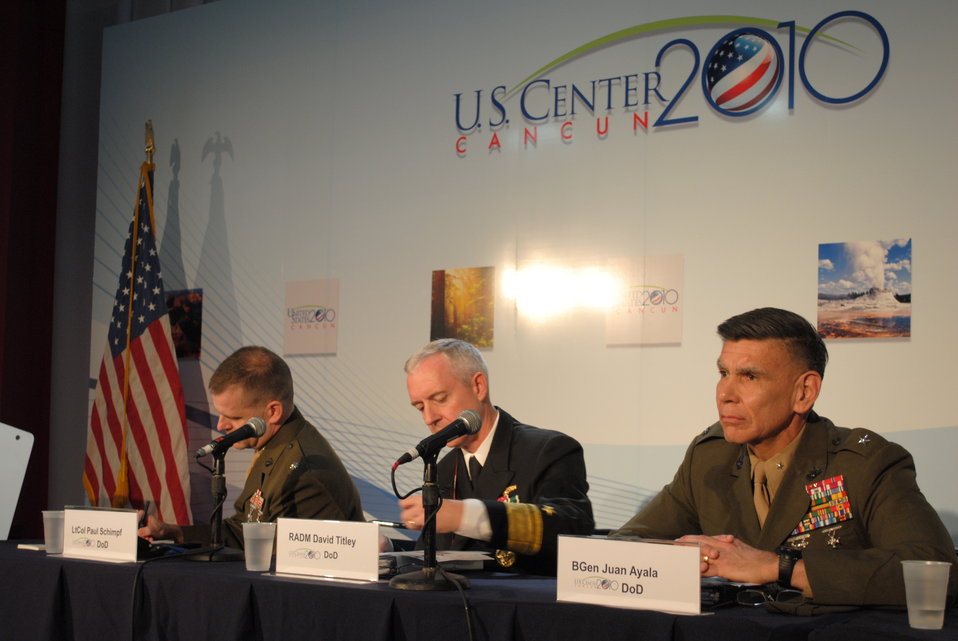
U.S. Deparrtment of Defense Representatives Respond to a Question

Members on the panel respond to a question from the audience during the panel, National Security Implication on Climate Change, sponsored by the U.S. Department of Defense at the U.S. Center at COP-16 in Cancun, Mexico, on December 9, 2010.